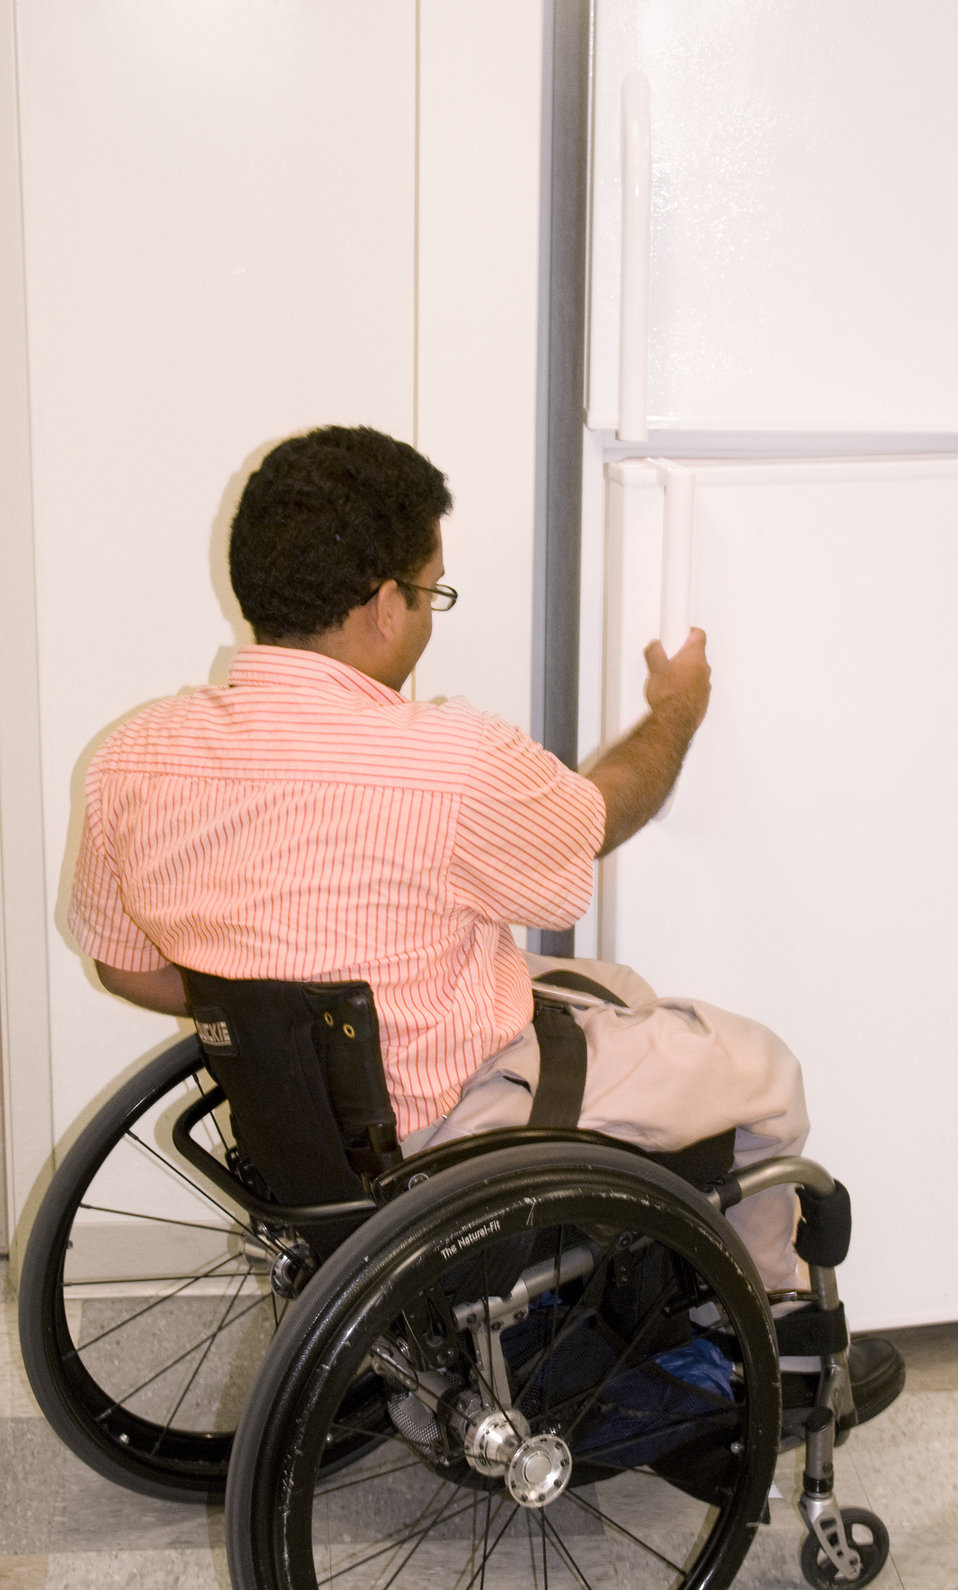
This man who was seated in his wheelchair, was photographed in this kitchen setting while opening the refrigerator's door. Note that the height of the doors, both to the refrigerator and freezer, are situated in such a way as to be highly-accessible to all who would need to place, or obtain contents from the unit.